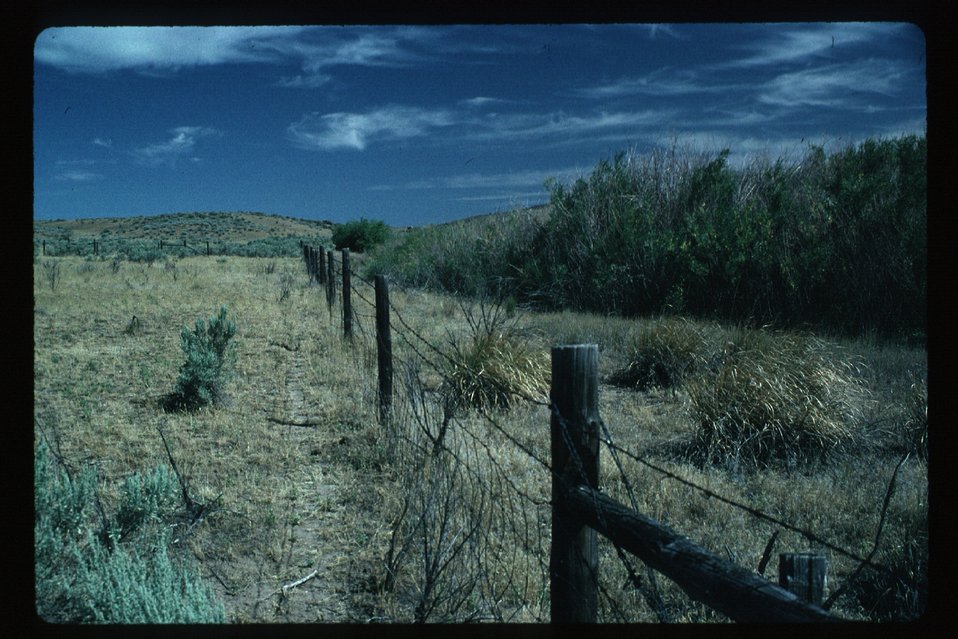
Riparian exclosure LSRD Lower Snake River District